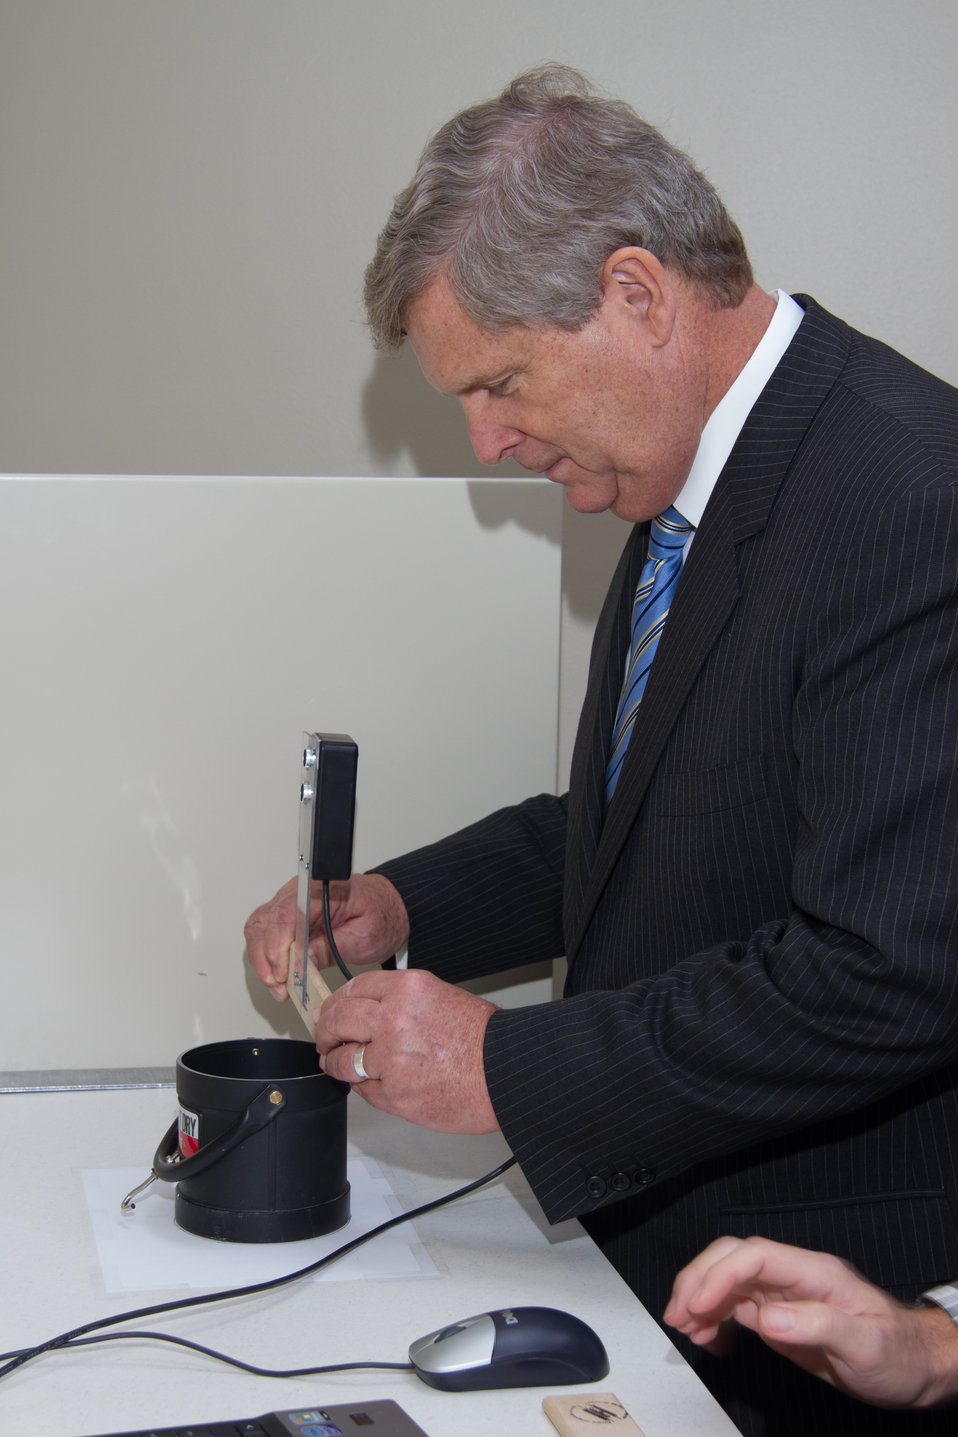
Agriculture Secretary Tom Vilsak tests his skill at performing the standard grain test weight strike off motion, using the Grain Inspection, Packers and Stockyards Administration (GIPSA) newly developed Test Weight Trainer device in Kansas City, MO, on Wednesday, Oct. 23, 2013.